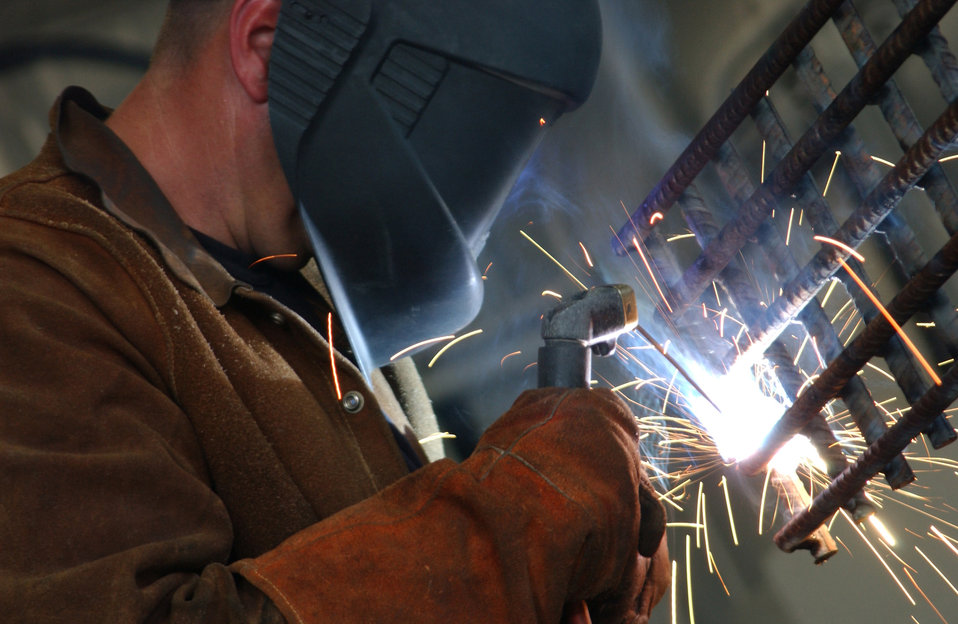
Sparks on the grill

SHAW AIR FORCE BASE, S.C. -- Tech. Sgt. Doug Dingus welds a sewer grill here recently. Sergeant Dingus is a heat plant foreman assigned to the 20th Civil Engineer Squadron.